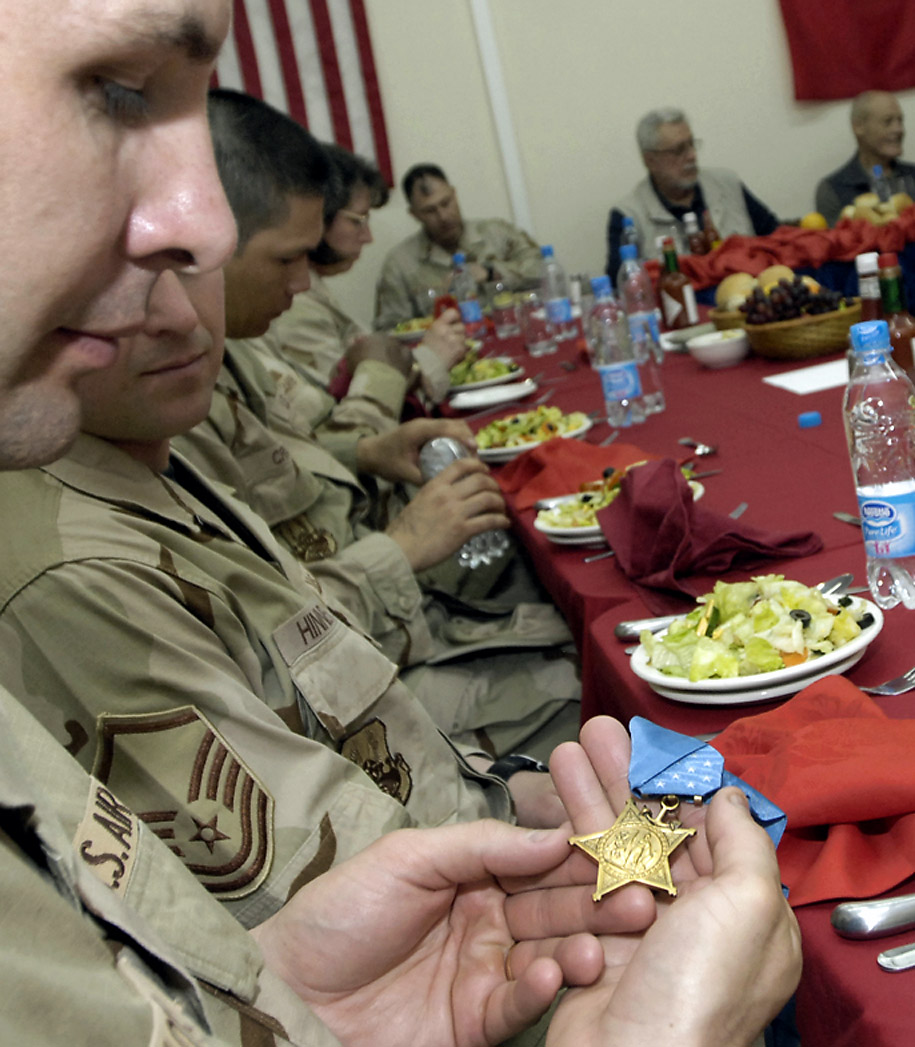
Medal of Honor recipients visit Manas Air Base

Master Sgt. Kent Klotz admires a Medal of Honor belonging to one of two visiting Medal of Honor recipients, retired Army Col. Robert L. Howard and retired Marine Capt. John J. McGinty III, who shared their experiences with Top 3 Council members March 15 at Manas Air Base, Kyrgyzstan. Both recipients received their medals from actions taken during the Vietnam War. Sergeant Klotz is with the 376th Expeditionary Logistics Squadron.